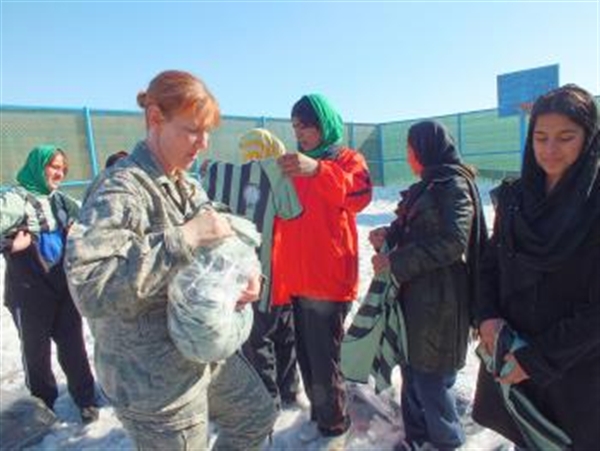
Colonel promotes soccer for Afghan girls

U.S. Air Force Col. AnneMarie Fenton hands out soccer jerseys to soccer players at the Allahuddin Orphanage in Kabul, Afghanistan, Feb. 29, 2012. With help from her daughter in Burke, Va., Fenton helped to coordinate the donation of more than 1,100 items to distribute to Afghan girls soccer teams.